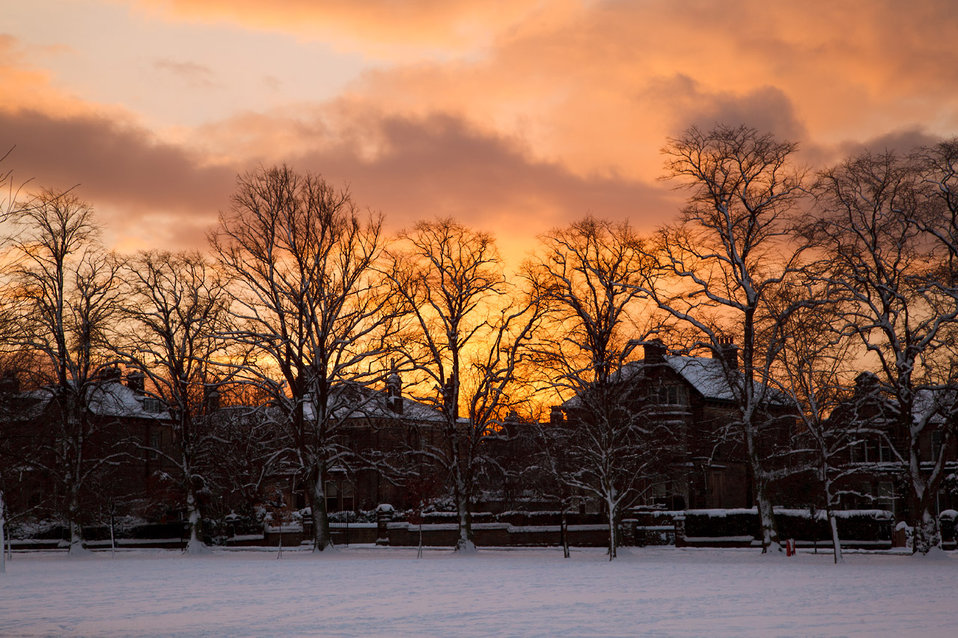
Sunset in winter

Colorful sunset with tree and houses in winter.